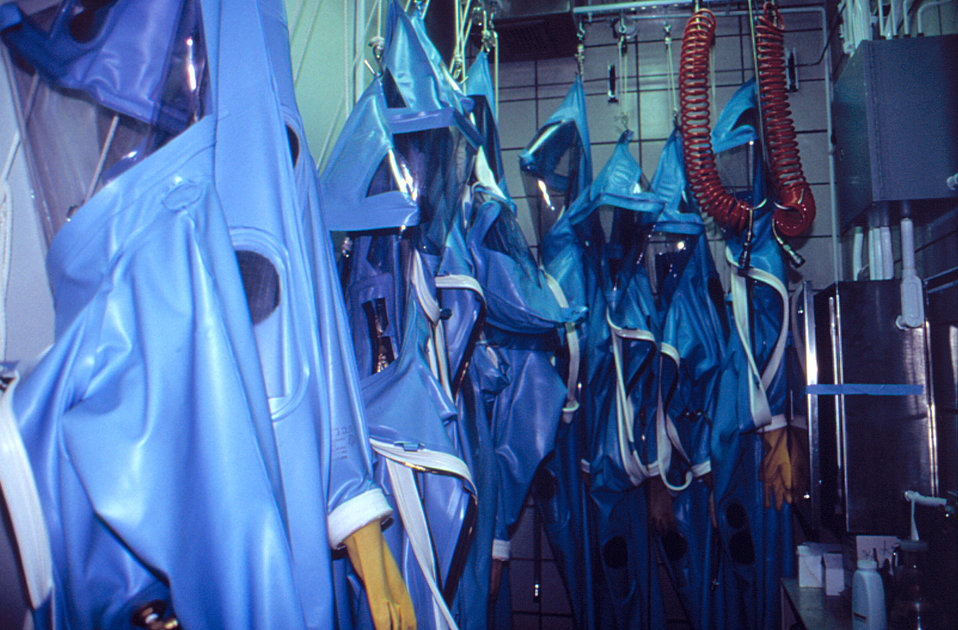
Protective body suits worn in a Biosafety Level 4 laboratory area.